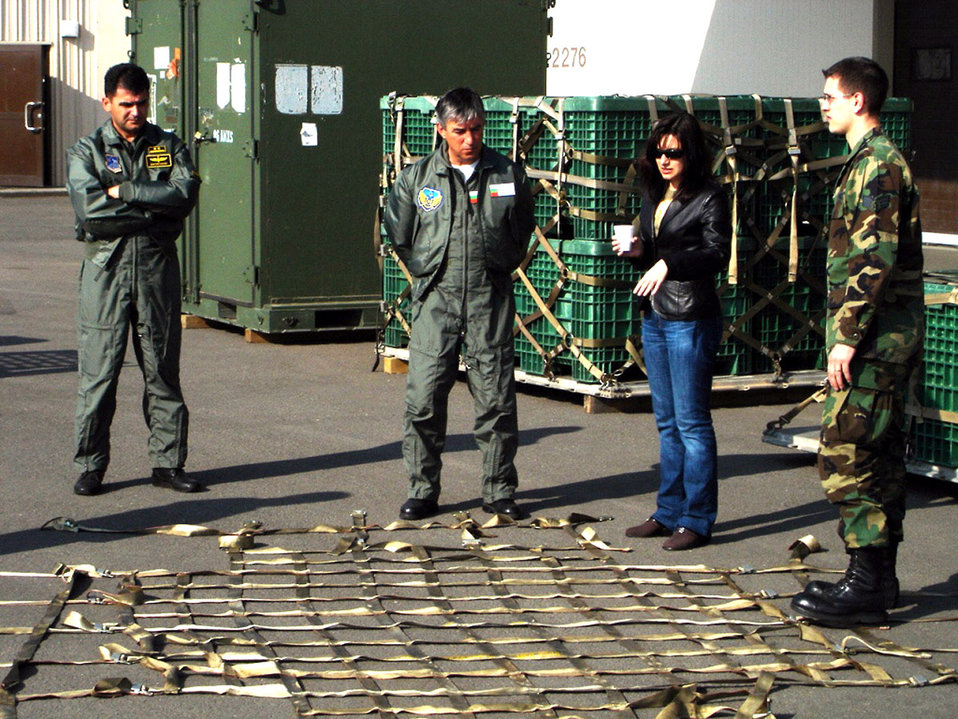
Bulgarian officers learn deployment how-tos during visit to Ramstein

During a tour of various detachments April 23 at Ramstein Air Base, Germany, Bulgarian air force officers, Col. Marin Natchev, Col. Evgeni Belkinov, and Lt. Col. Dimitar Ivanov observed U.S. Air Force deployment methods. The Bulgarian air force is setting up their expeditionary units, and wanted to see how the U.S. Air Force prepares and trains their Airmen before deployment.